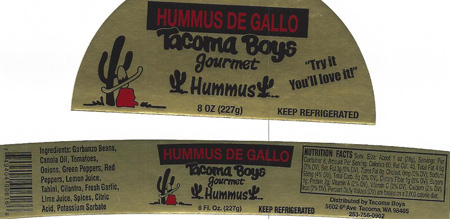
RECALLED – Hummus

July 16, 2013 – Product Recall – Hagee Foods Inc. dba Penny's Salsa Inc. Recalls Hummus Products Because of Possible Health Risk.